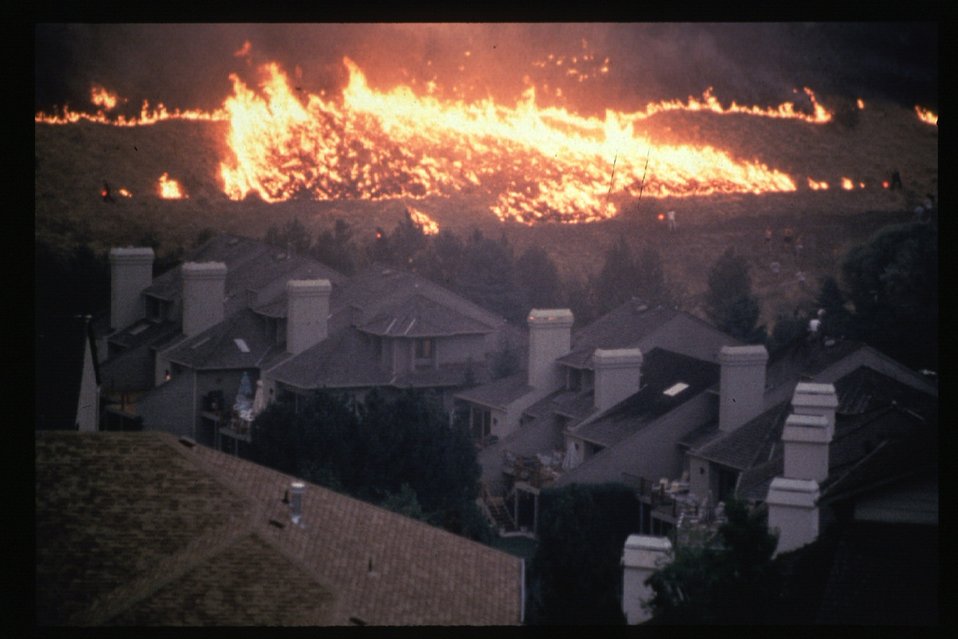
Fire on Boise Front 8th Street Fire Threatened houses Four Rivers Field Office LSRD Lower Snake River District